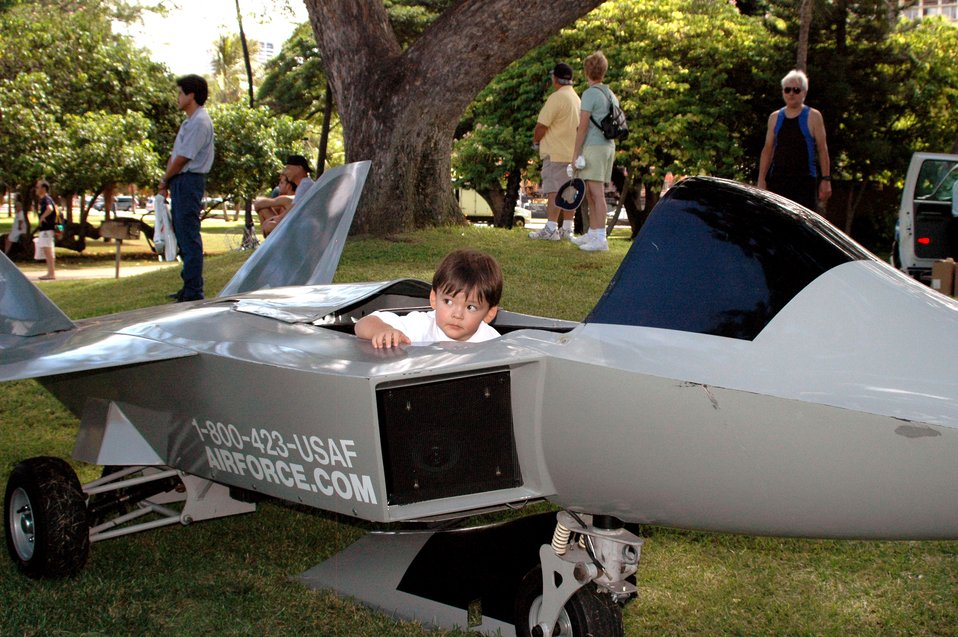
'Tower, I'm ready for takeoff'

Kellen Murphy, 2, tests out an Air Force recruiter's F-22 mini jet Sept 13 at Fort DeRussy, Hawaii. The recruiters also brought two Thunderbird mini jets and gave the children rides.